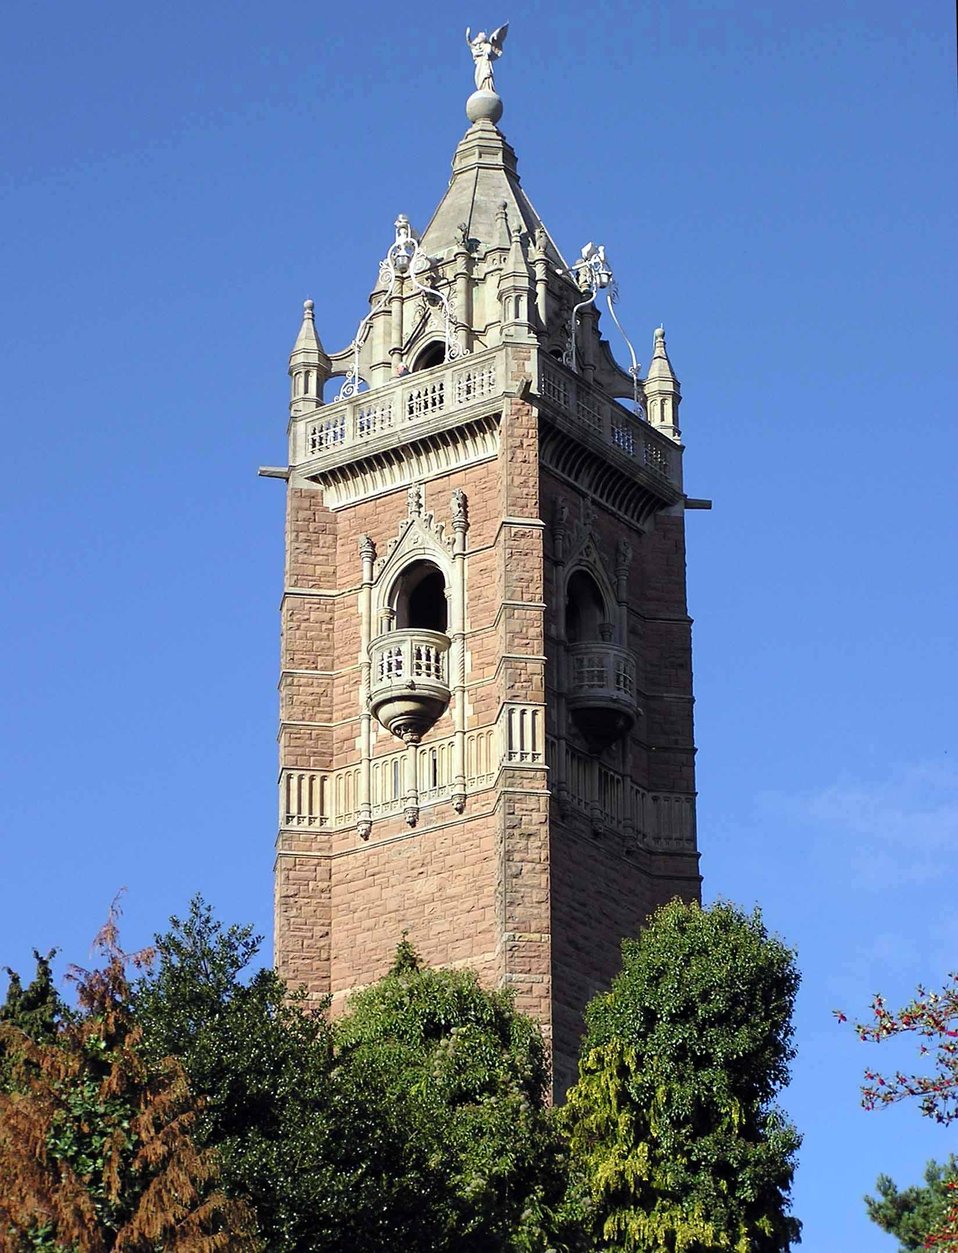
The Cabot Tower, Bristol, England.
The 105 foot high (32 metre) Cabot Tower on Brandon Hill is in the city centre of Bristol, England. The tower was opened in 1898 to commemorate the 400th anniversary of explorer John Cabot’s voyage to America in 1497. The tower was built from red sandstone and cream Bath stone. The roman numerals CCCC(400) are engraved on the four sides. The winged figure on top represents Commerce. The tower is free admission. The view includes the leisure and housing complex being built at Canons Marsh (where At-Bristol is situated), the SS Great Britain ship, the Council House and Cathedral, the impressive University Tower and just a glimpse of the Clifton Suspension Bridge.